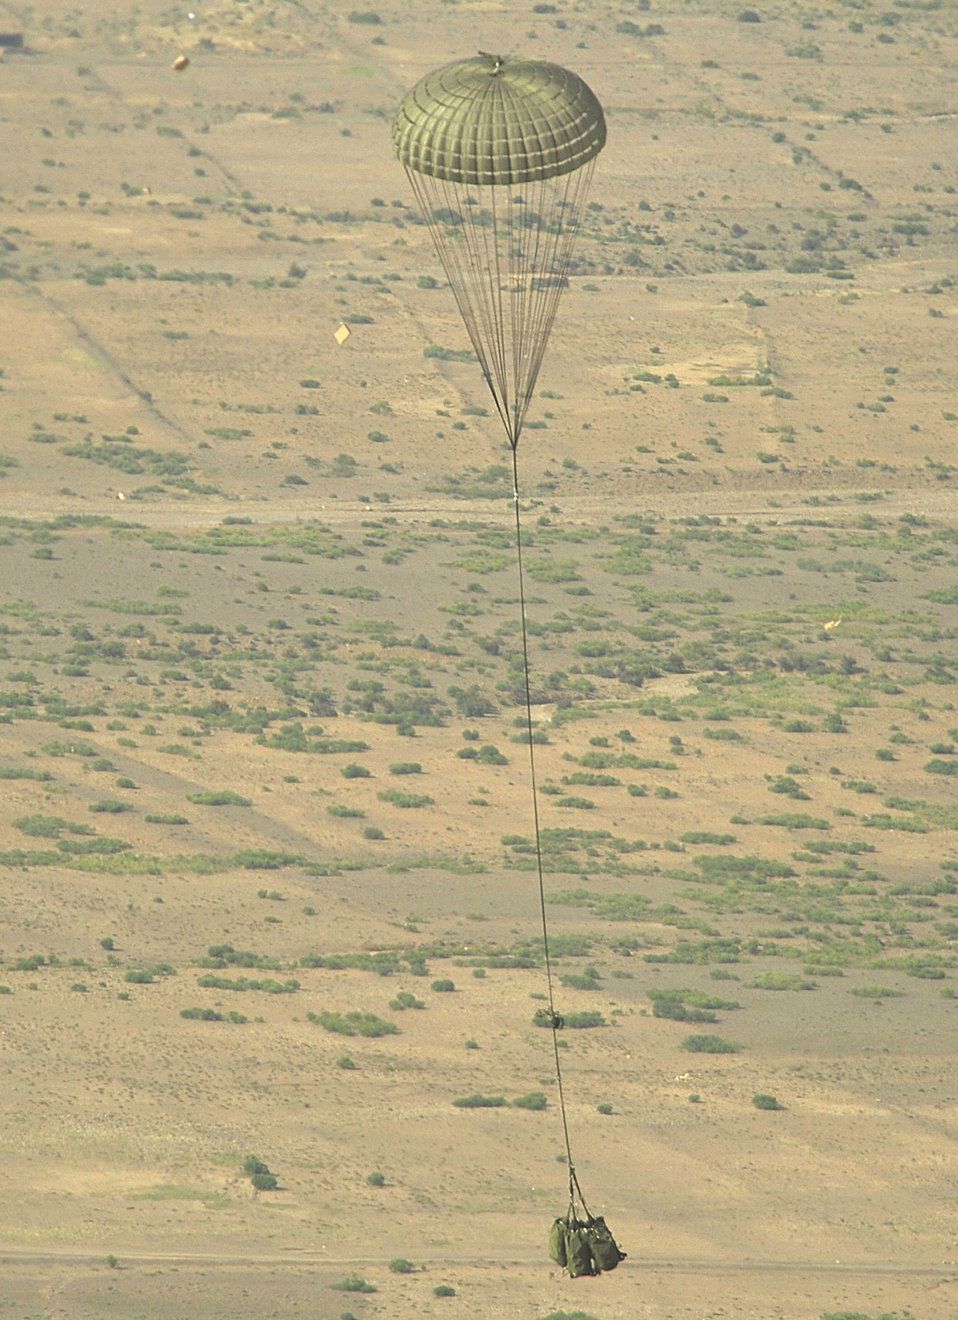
Total-force team airdrops 10-ton artillery load

An M198 howitzer parachutes out of an Air Force C-130 Hercules to an Army unit waiting below Aug. 8 in Afghanistan. An Army and Air Force aicrew from the 774th Expeditionary Airlift Squadron delivered the artillery piece to a forward operating base in Afghanistan. The 36-foot long cannon will give troops the ability to send high-explosive shells at insurgents threatening the peace and security of the Paktika Province.